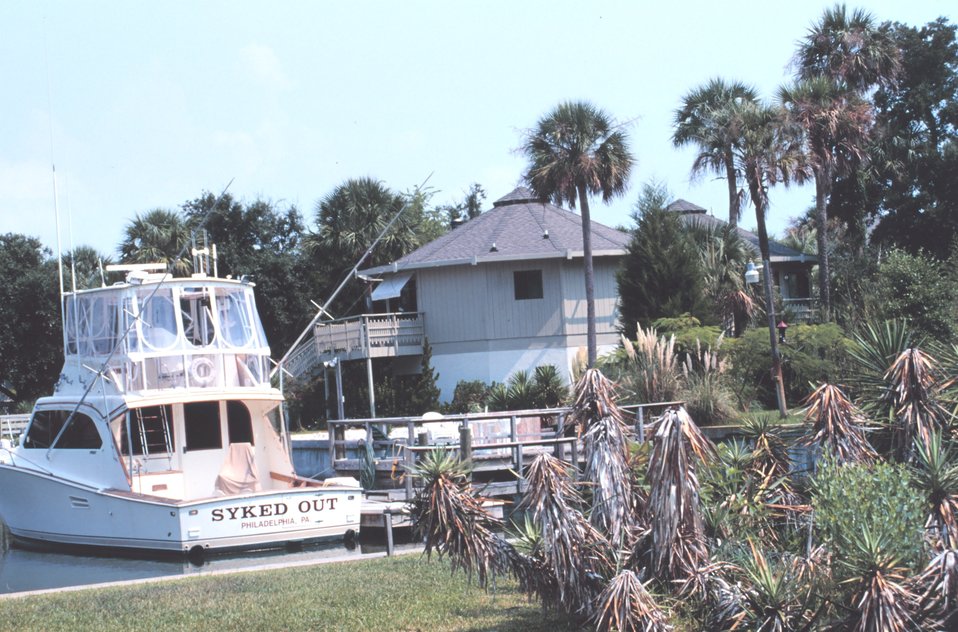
Recreational fishing boat and vacation home